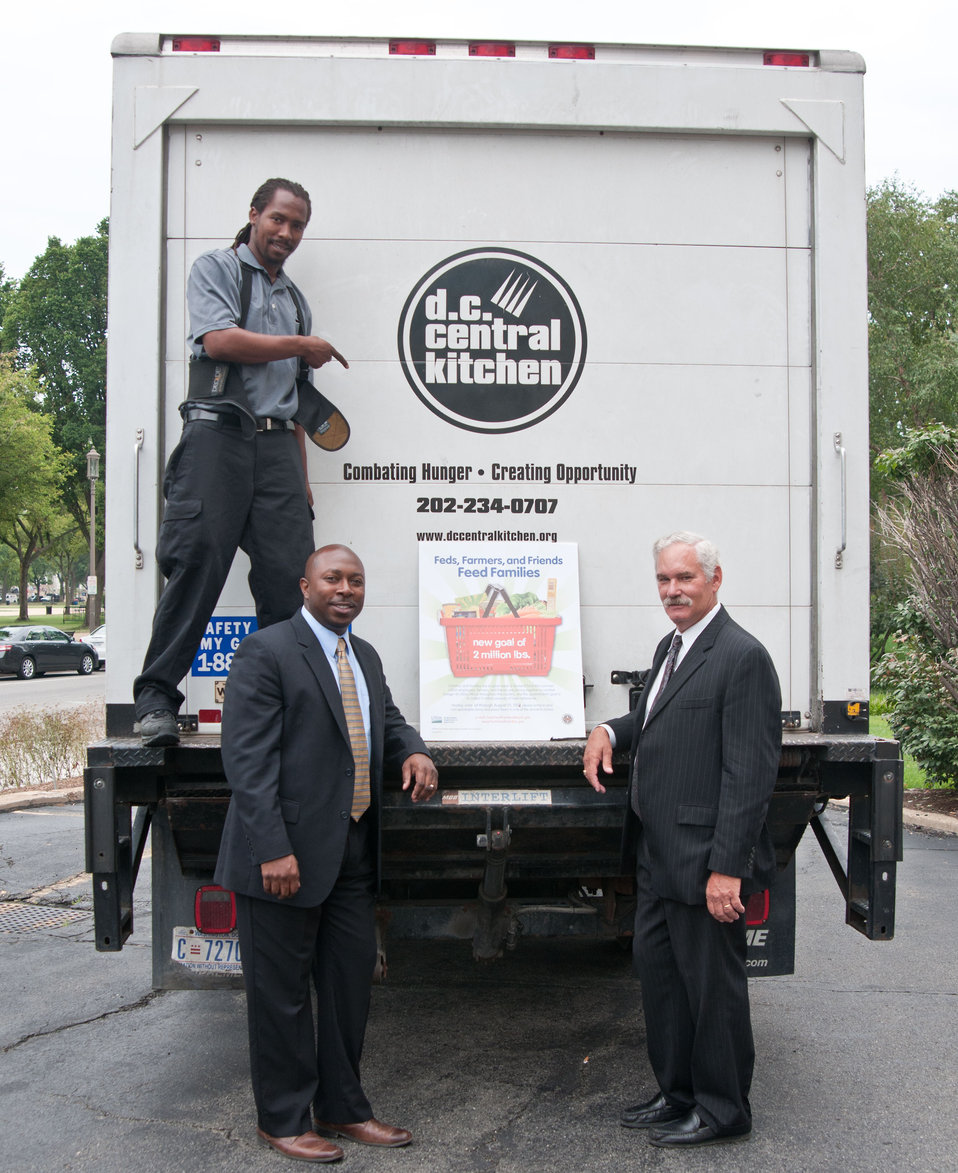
Donation complete, Agriculture Under Secretary Farm and Foreign Agriculture Service (FFAS) Michael Scuse (right) donated 1,000 pounds of potatoes to DC Central Kitchen, in participation with the Feds Feed Families Food Drive, on Monday August 20, 2012 in front of the Agriculture headquarters in Washington, D.C. FFAS Deputy Under Secretary Karis Gutter (center) transfer the 20 50-pound bags from nearby pick-up to cargo truck. Under Secretary Scuse, a farmer himself purchased and loaded his pick-up this weekend with half a ton of potatoes at nearby Wicks farm, in Delaware. Secretary Scuse farms 1,700 acres of corn, soybeans and wheat. He says that this is the first of many more donations this year. DC Central Kitchen Fleet Coordinator/Transportation Driver Anthony Turner (left) received the spuds in one of the kitchen’s trucks. When asked when the potatoes will get to people’s mouths, he replied, “Couple hours. Once I get it to the kitchen, they have volunteers there, we work off volunteers, (and) if it wasn’t for the volunteers we would not run. Once I get it back, the volunteers will cut it up, shave them, dice or whatever they are going to do, they are going to put it into soup, or something; they (the recipients) will get it by tonight.”